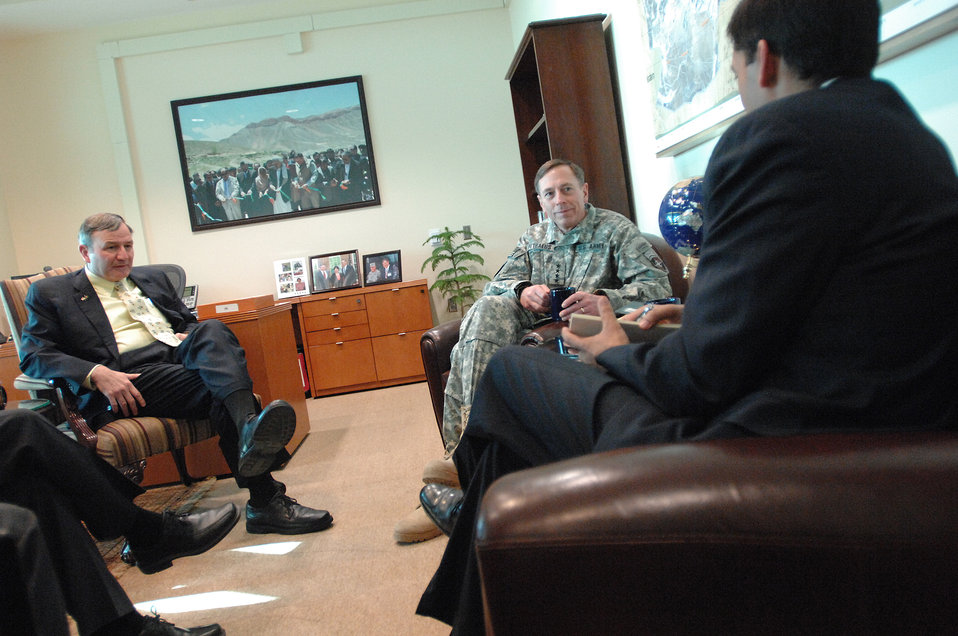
110208sv Shah028

U.S. Ambassador Karl W. Eikenberry meets with ISAF (International Security Assistance Force) Commander General David Petraeus and Dr. Rajiv Shah, Administrator of the United States Agency for International Development (USAID) at the U.S. Embassy in Kabul, Afghanistan on Tuesday, February 8, 2011. (S.K. Vemmer/Department of State)